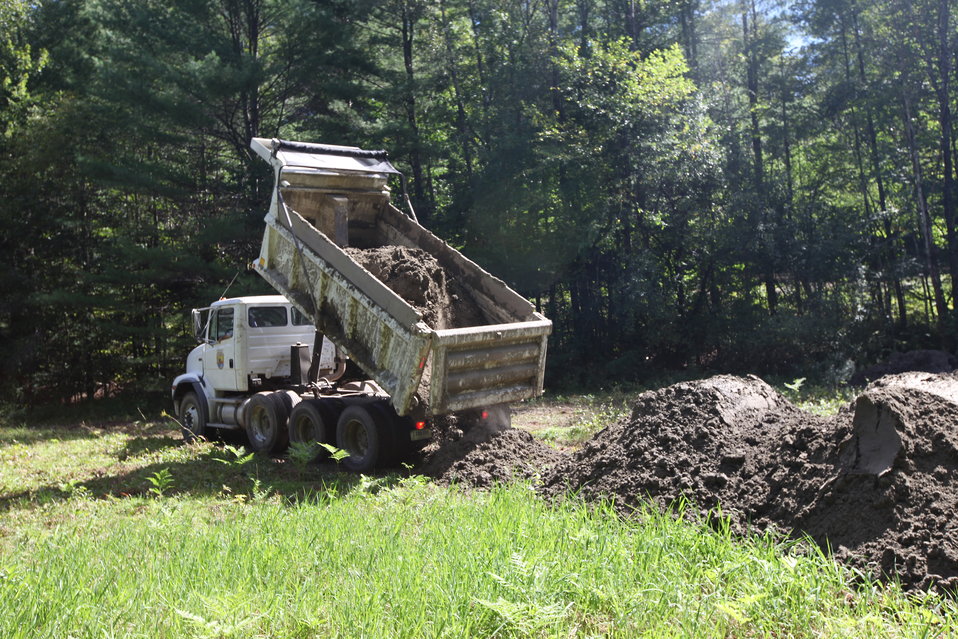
Storm damage relief at White River NFH

Clean-up of mud and silt deposited during the flood.